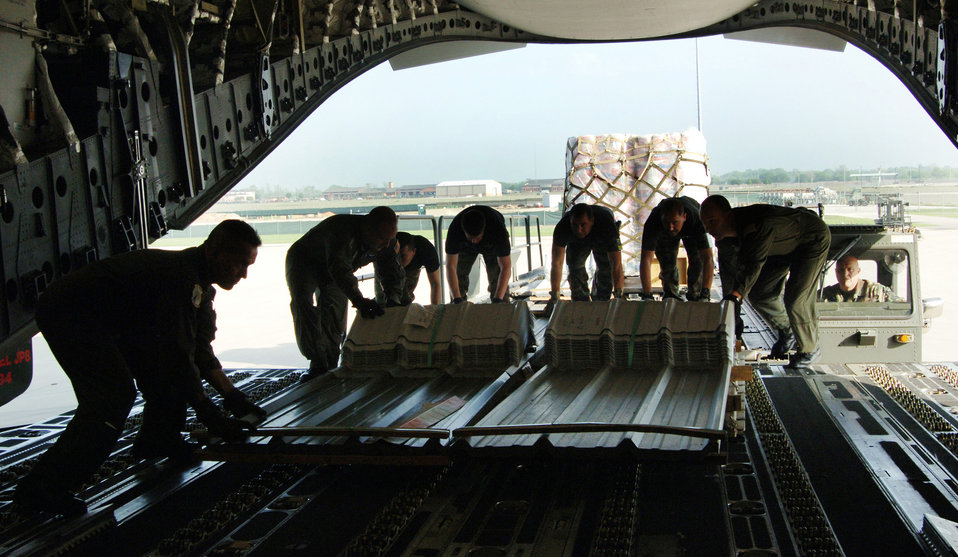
Reserve aircrew helps fight war on drugs

Airmen from the 300th Airlift Squadron at Charleston Air Force Base, S.C., and the 433rd Civil Engineer Squadron at Lackland AFB, Texas, load cargo for transport to Saint Lucia Friday, April 7, 2006. The aircrew was delivering construction materials and Reserve civil engineers who are building an operations center and barracks for the police force in support of Saint Lucia's counter-drug operations.